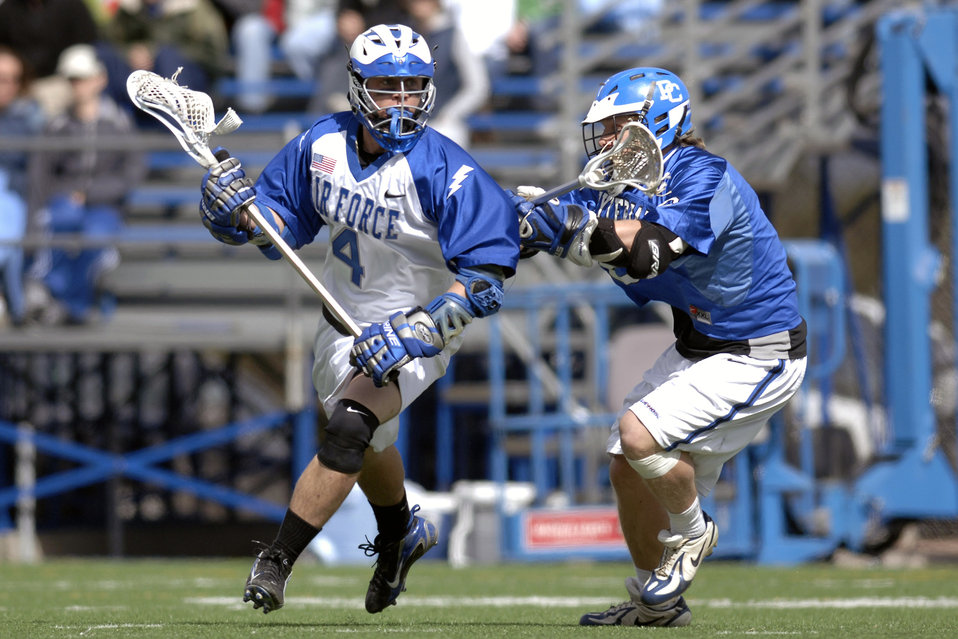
Pushing down field

Air Force Academy junior Eric Evans works around a defender as Air Force defeated Presbyterian College 12-4 at the Cadet Lacrosse Stadium in Colorado Springs, Colo. The Falcons, undefeated at home, move to 2-4 for the season.